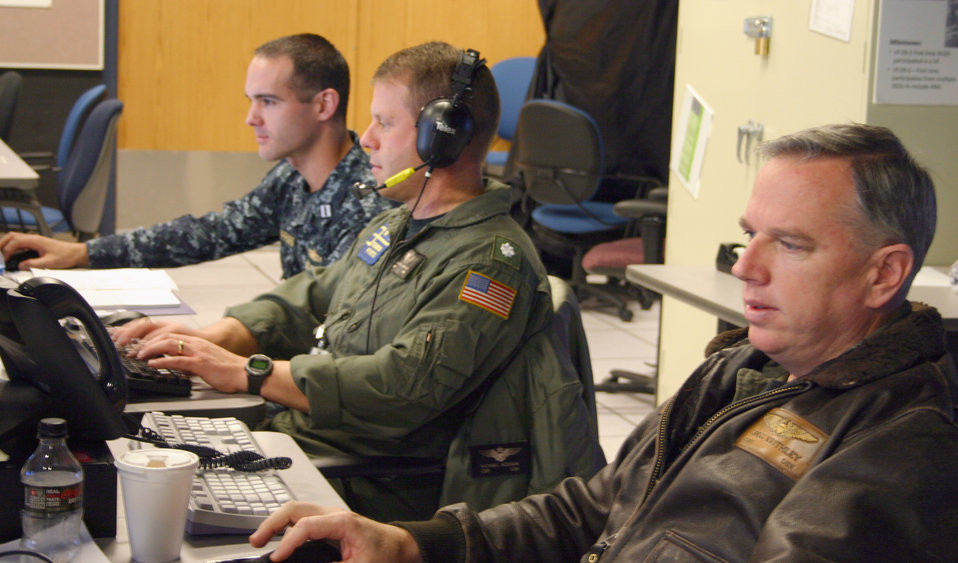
300 take part in virtual battle

(From left) Navy Lt. Justin Sheppard, Navy Cmdr. Michael Noonan and Navy Capt. Greg Keithley, from Third Fleet stationed at San Diego, coordinate naval support in the Maritime Operating Center during Virtual Flag 11-1, hosted by the 705th Combat Training Squadron at Kirtland Air Force Base, N.M. More than 300 joint warfighters at 18 locations from Japan to England converged in a virtual battlespace for a four-day exercise ending Dec. 16, 2010. With a price tag of $2 million, it would cost 20 times that for a similar exercise with live aircraft, according to a recent 705th CTS study.